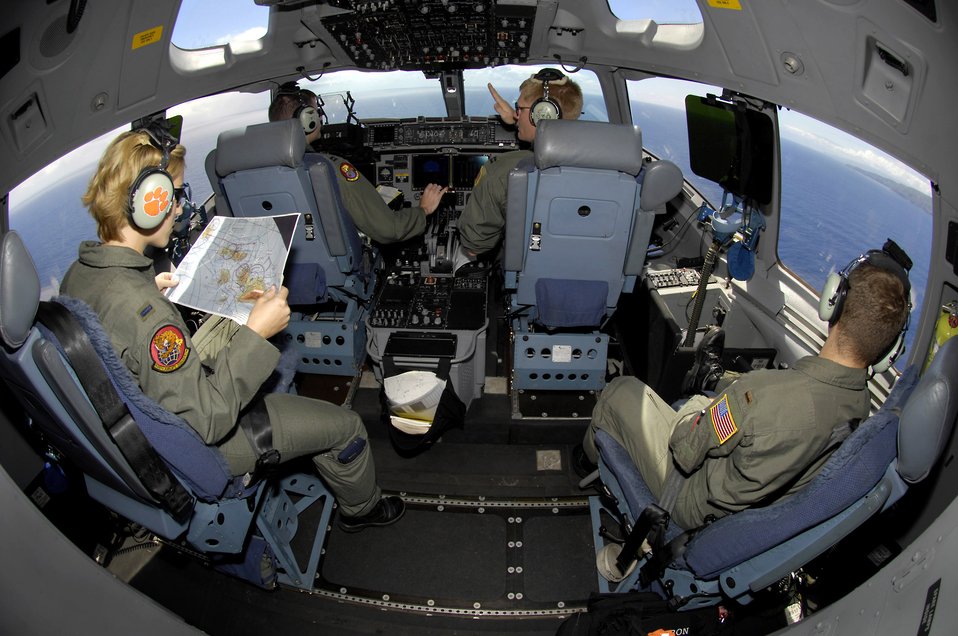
Practice makes perfect

C-17 Globemaster III pilots take turns practicing low-level flying off the coast of Hawaii May 30. The pilots are from the 535th Airlift Squadron, Hickam Air Force Base, Hawaii.